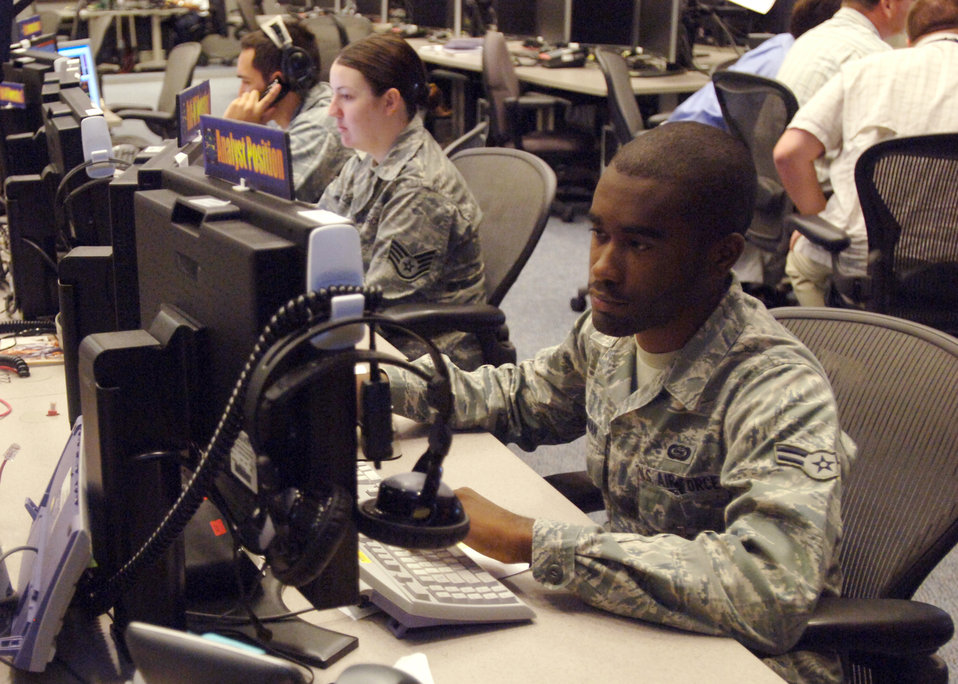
Empire Challenge 10

Airman 1st Class David Thurman tracks data provided by reconnaissance aircraft August 12, 2010, during Empire Challenge 10 at Langley Air Force Base, Va. The Empire Challenge 10 exercise was an annual joint and coalition intelligence, surveillance and reconnaissance interoperability demonstration that integrated resources worldwide to showcase emerging ISR capabilities and provide vital lessons learned to improve support to warfighters at the tactical level. Airman Thurman is a 13th Intelligence Squadron imagery analyst.